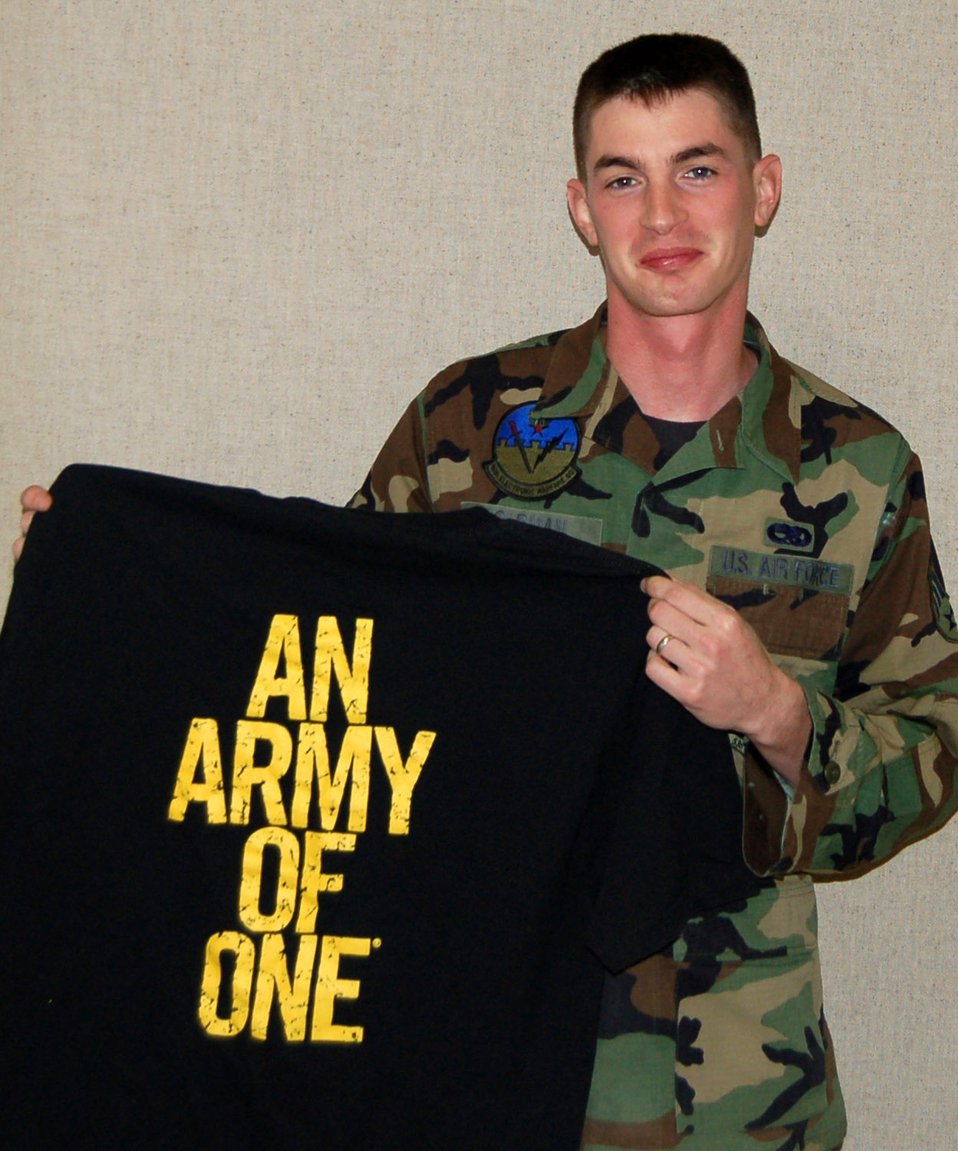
Stepping out of the blue for Army green

Senior Airman Mike Goldman displays an Army shirt that he will be wearing very soon. Airman Goldman, a 16th Electronic Warfare Squadron journeyman at Eglin Air Force Base, Fla., is leaving the Air Force Dec. 29 to join the Army through